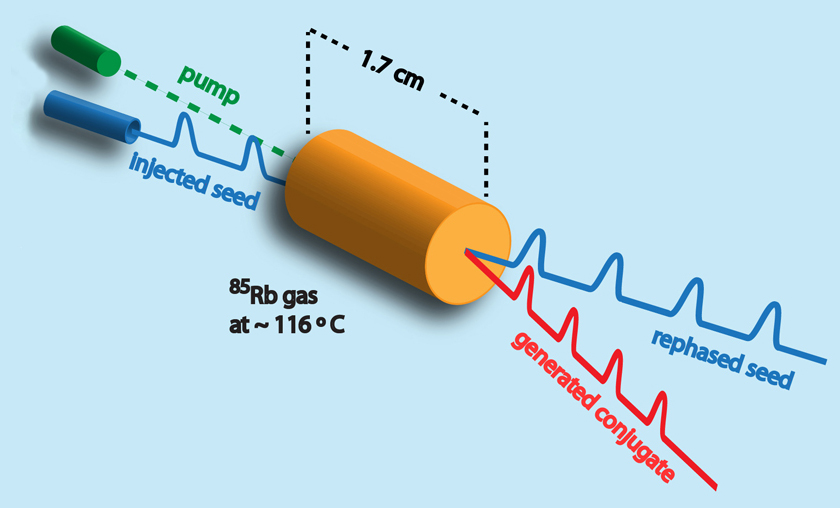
Fast Light

In four-wave mixing, researchers send 'seed' pulses of laser light into a heated cell containing atomic rubidium vapor along with a separate 'pump' beam at a different frequency. The vapor amplifies the seed pulse and shifts its peak forward, making it superluminal. At the same time, photons from the inserted beams interact with the vapor to generate a second pulse called the 'conjugate.' Its peak, too, can travel faster or slower depending on how the laser is tuned and the conditions inside the gain medium.